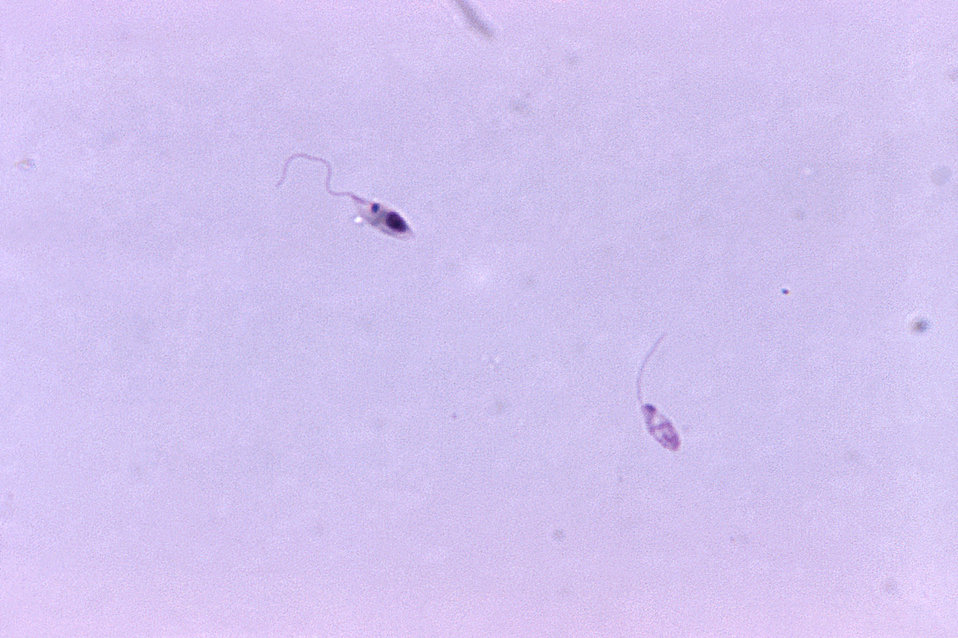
Leishmania tropica, leptomonad-form.